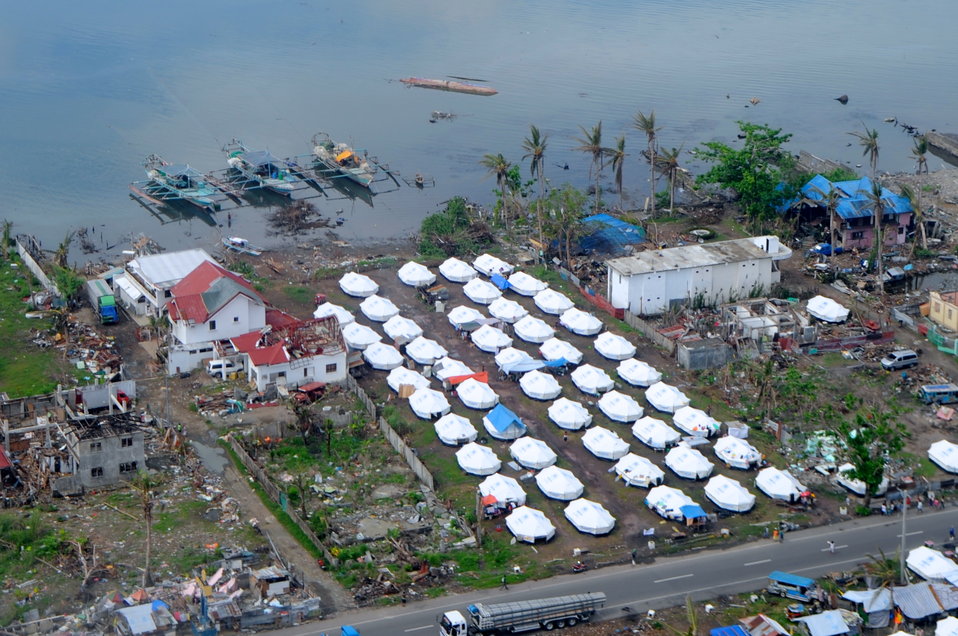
Temporary Shelters Sit Beside Lingering Damage as Secretary Kerry Arrives in Tacloban City

Temporary shelters provided by the United Nations sit beside remaining damage from Typhoon Haiyan as the aircraft carrying U.S. Secretary of State John Kerry arrived in Tacloban City, Philippines, to announce $25 million in fresh U.S. recovery aid on December 18, 2013.